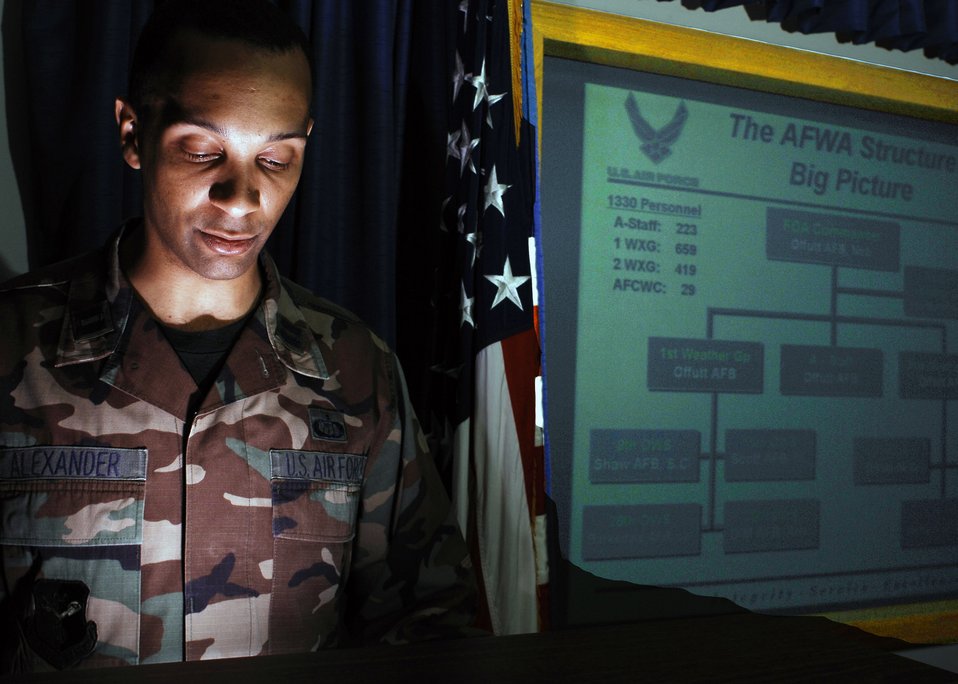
Weather watchers

Capt. Jeremy Alexander goes over the unit's mission briefing Jan. 11 at Offutt Air Force Base, Neb. The briefinig is used to give visitors a better idea of Air Force Weather Agency products and the people who accomplish the mission. Captain Alexander is the deputy director of staff for the Air Force Weather Agency.